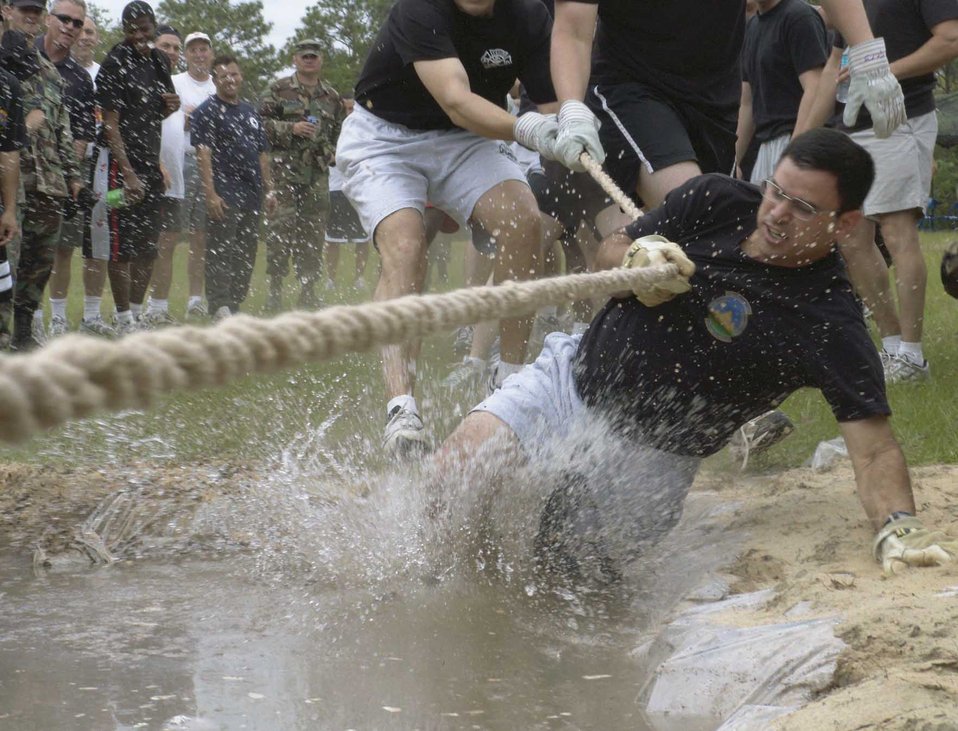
Warrior Day

EGLIN AIR FORCE BASE, Fla. -- Lt. Col. Gus Kirkikis is pulled into the pit during the Warrior Day tug-of-war competition here April 29. The pit was filled with various food products from Meals, Ready-to-Eat. Colonel Kirkikis is assigned to the 796th Civil Engineer Squadron.